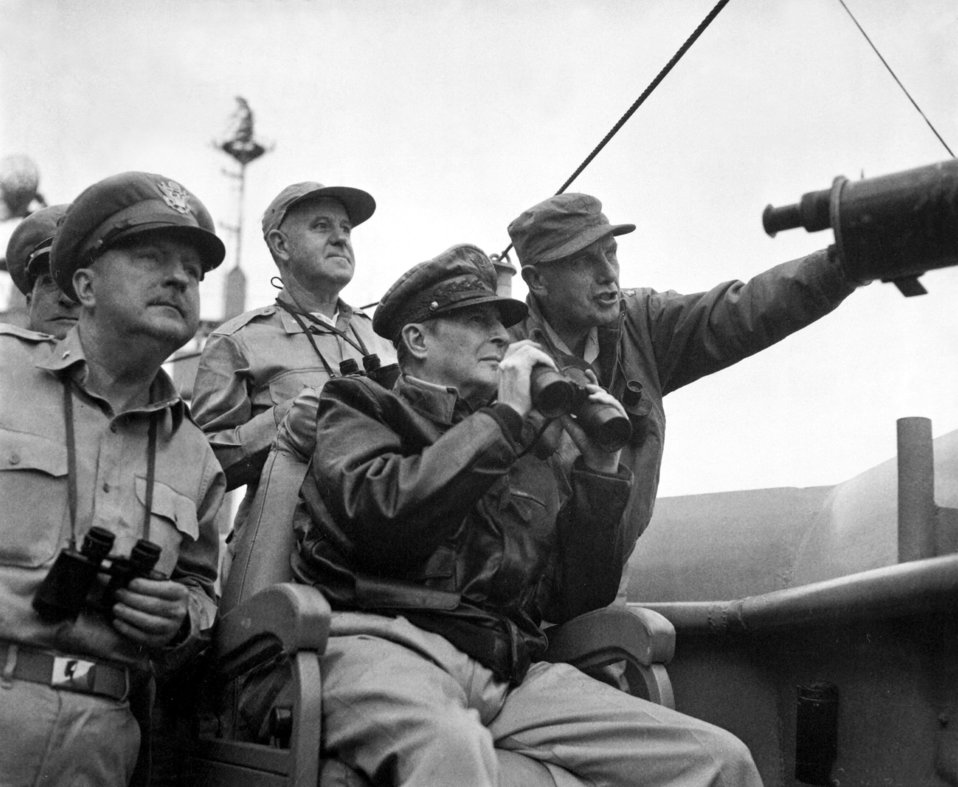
AFMC Freedom's Call Tattoo 2010 scheduled for June 25

Tattoo's theme for 2010 will commemorate veterans from the Korean War, which began June 25, 1950, when North Korea opened fire on South Korea's Army positions south of the 38th parallel, the line which serves as the border between the two countries. Pictured here are Brig. Gen. Courtney Whitney; Gen. Douglas MacArthur, Commander in Chief of U.N. Forces; and Maj. Gen. Edward M. Almond observing the shelling of Inchon from the U.S.S. Mt. McKinley, Sept. 15, 1950.